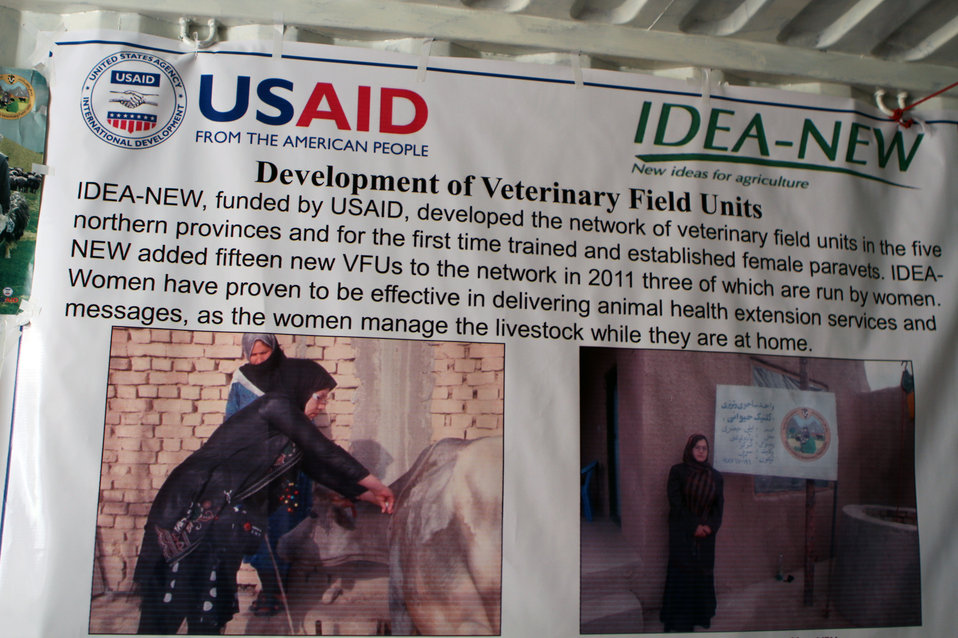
Development of Veterinary...